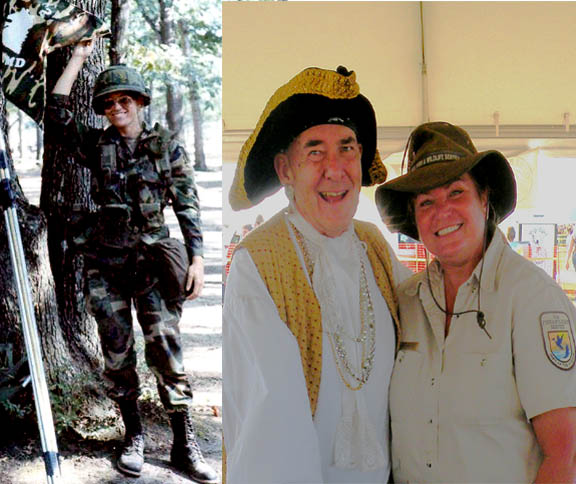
Cindy Heffley (left) In the field at Ft Drum, NY, 1985 (right) Cindy with Pamlico Jack at the Outer Banks Seafood Festival, Nags Head, NC, 2012. .
Cindy Heffley enlisted in the Pennsylvania Army National Guard in August 1981. After basic training and Military Police School at Ft. McClellan, AL, she returned home to spend four years with the 723rd MP Company in Philadelphia, PA. In addition to routine training, Heffley’s duties took her to Ft. Drum, NY, and West Point Military Academy for short tours. After moving to New Jersey in 1985, she transferred to the New Jersey Army National Guard’s Det. 2, 57th Troop Command Headquarters in Atlantic City and was honorably discharged as a Sergeant in 1987..
.
After many years away from government service, she was hired as an Office Assistant at E.B. Forsythe National Wildlife Refuge, Oceanville, New Jersey, in 1999 and is now a Visitor Services Specialist (Park Ranger) at Alligator River and Pea Island National Wildlife Refuges in Northeastern Coastal NC.